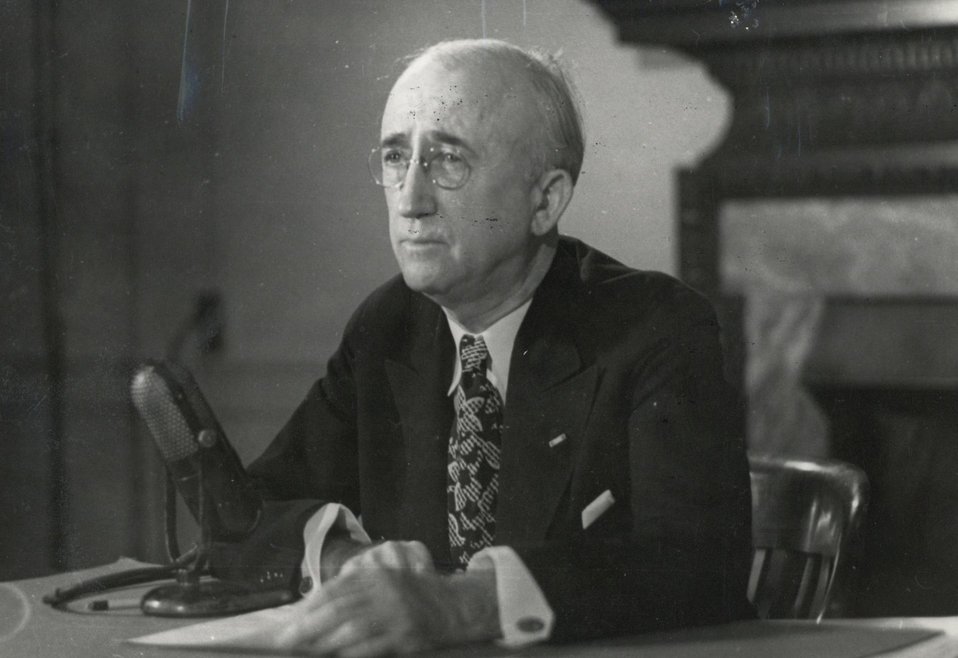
James F. Byrnes, U.S. Secretary of State, July 3, 1945 to January 21, 1947